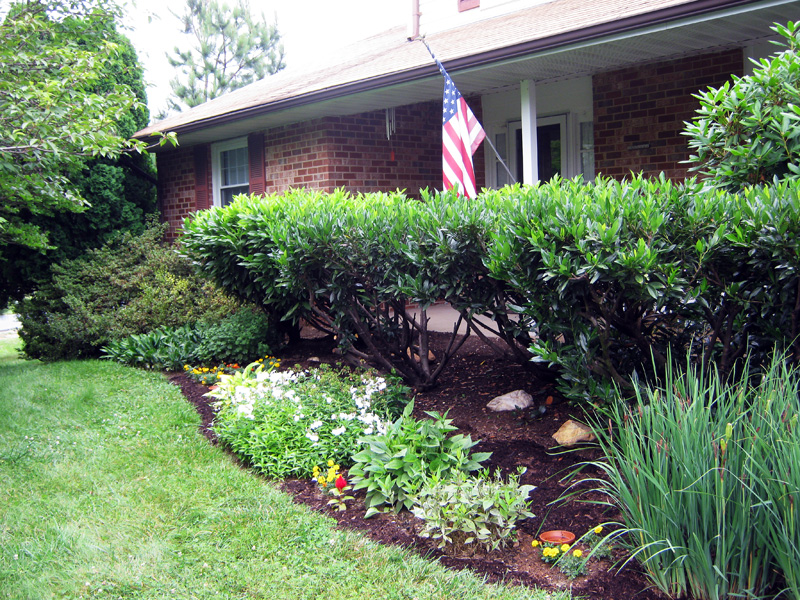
Pollinator Garden - Maryland

This garden is a certified Wildlife Habitat.